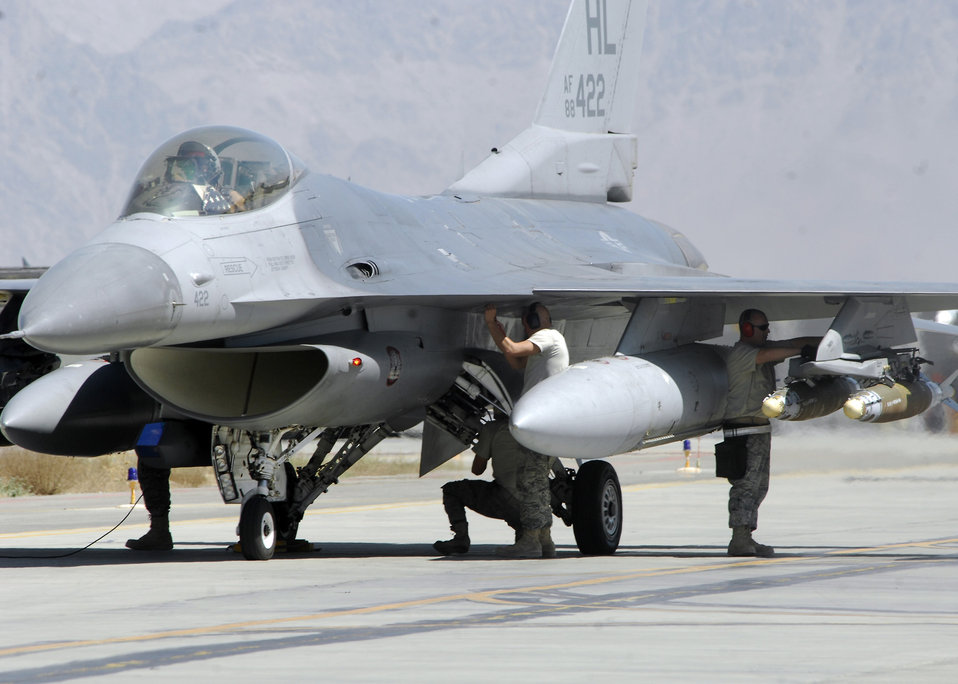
Check and re-check

Airmen perform a final safety inspection before an F-16 Fighting Falcon takes off from Bagram Airfield, Afghanistan for a mission Aug. 20. The F-16s and the Airmen are deployed from Hill Air Force Base, Utah, and are assigned to the 421st Expeditionary Fighter Squadron.